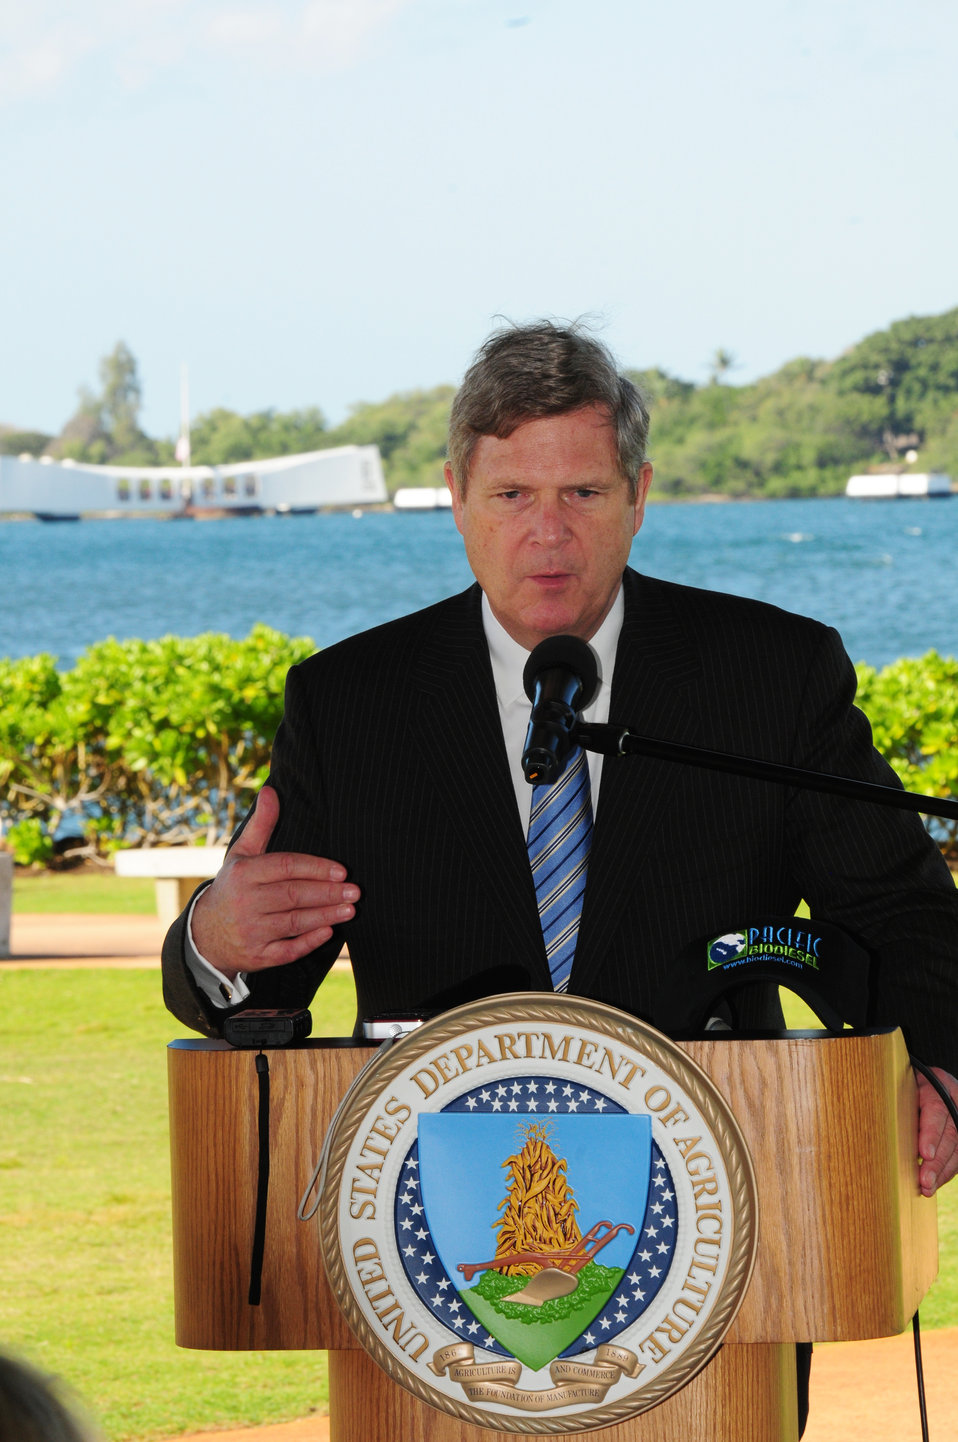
Agriculture Secretary Tom Vilsack highlights the Obama Administration's commitment to renewable energy at the.World War II Valor in the Pacific National Monument's Pearl Harbor Visitor Center. Pearl Harbor naval base was the first Hawaii military marine fleet to use biodiesel, replacing the Department of Navy-operated tour boats that shuttled visitors to and from the USS Arizona Memorial with five new boats capable of running on 100% biodiesel. Near Honolulu, HI, on Tuesday, January 10, 2012.